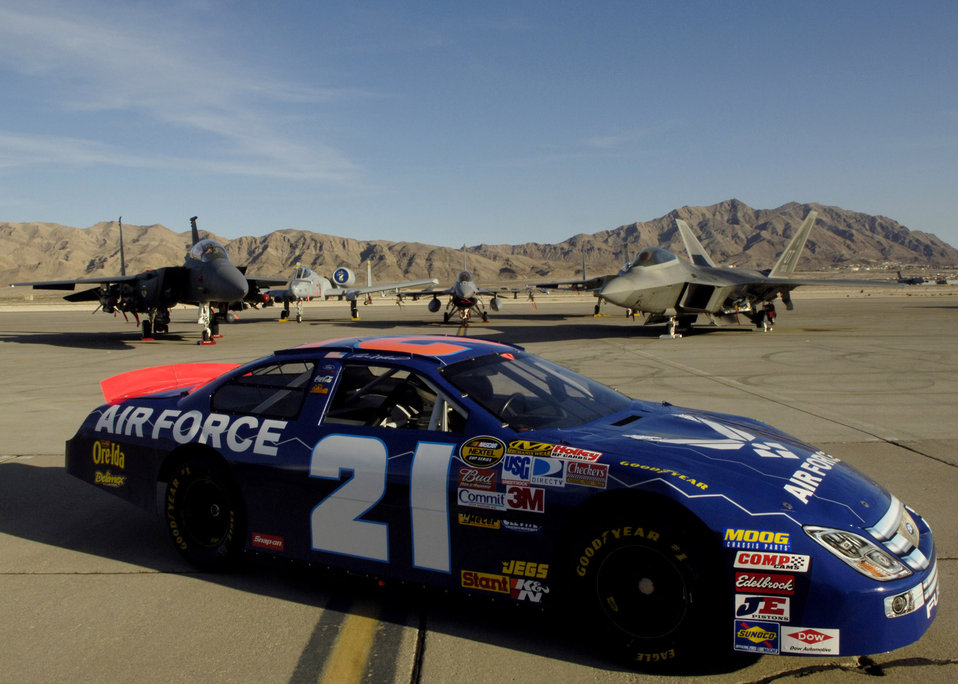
Air Force Racing

The Air Force No. 21 car is displayed on the flight line at Nellis Air Force Base, Nev., March 8. Wood is at Nellis visiting Airmen before his NASCAR Nextel Cup UAW Daimler-Chrysler 400 race March 10.